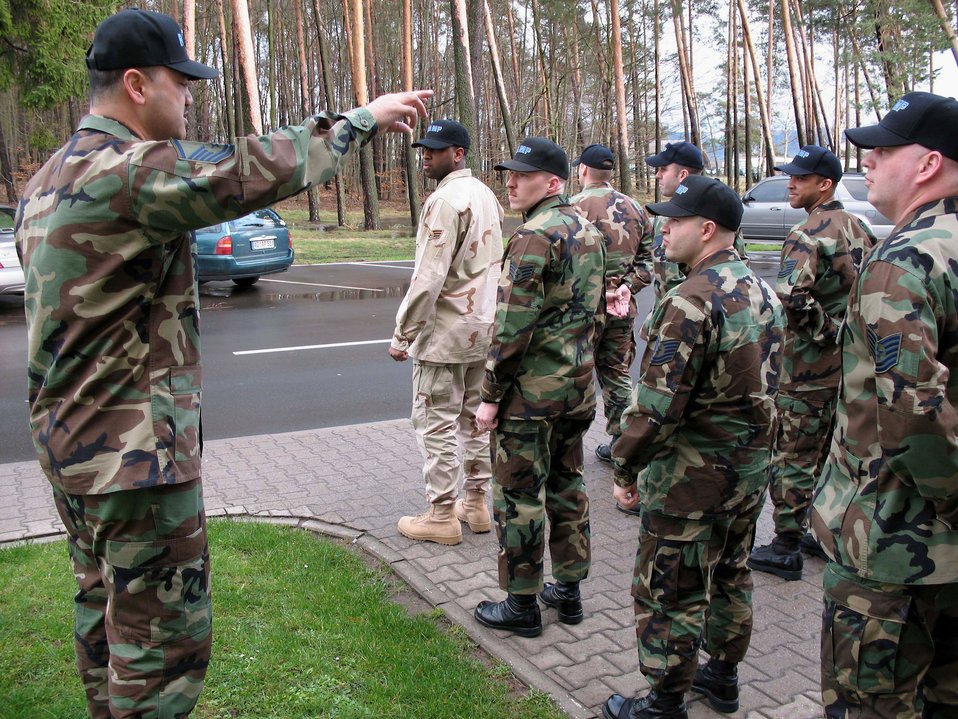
Motivational program ending at Ramstein

Master Sgt. Leroy Lefiti briefs fellow Ramstein Area Motivational Program, or RAMP, staff before their retreat ceremony. After three years of helping Airmen get back on their feet, the correctional custody program is ending.